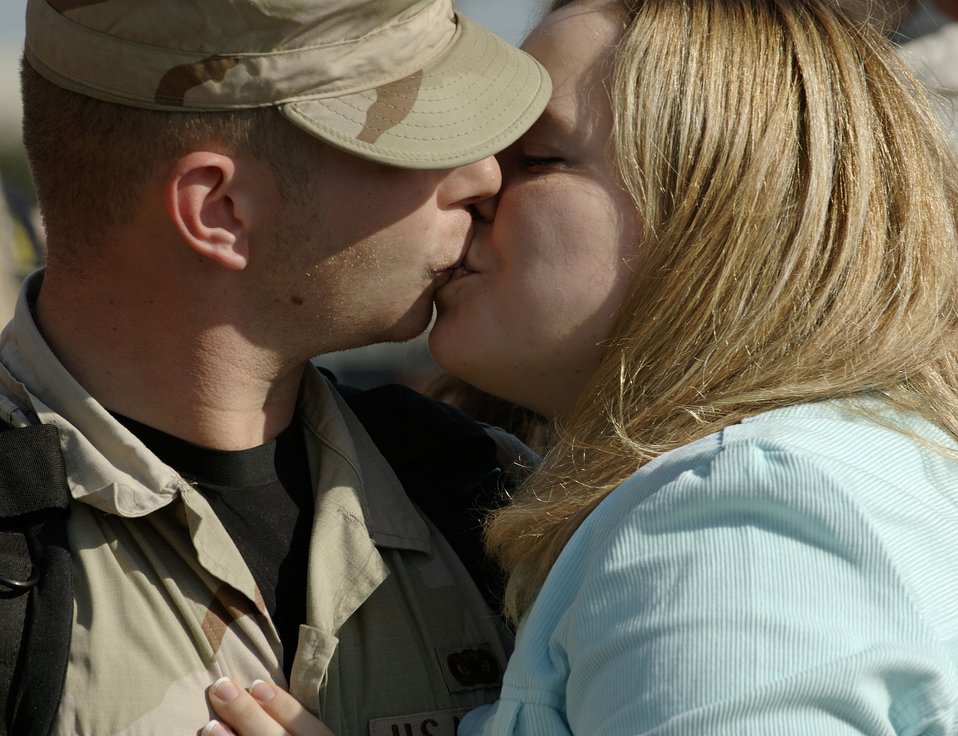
Back home

LANGLEY AIR FORCE BASE, Va. (AFPN) -- Senior Airman Joe Pallozo kisses his wife after returning home from an eight month deployment to Iraq Jan. 9. Airman Pallozo is with the 1st Security Forces Squadron.